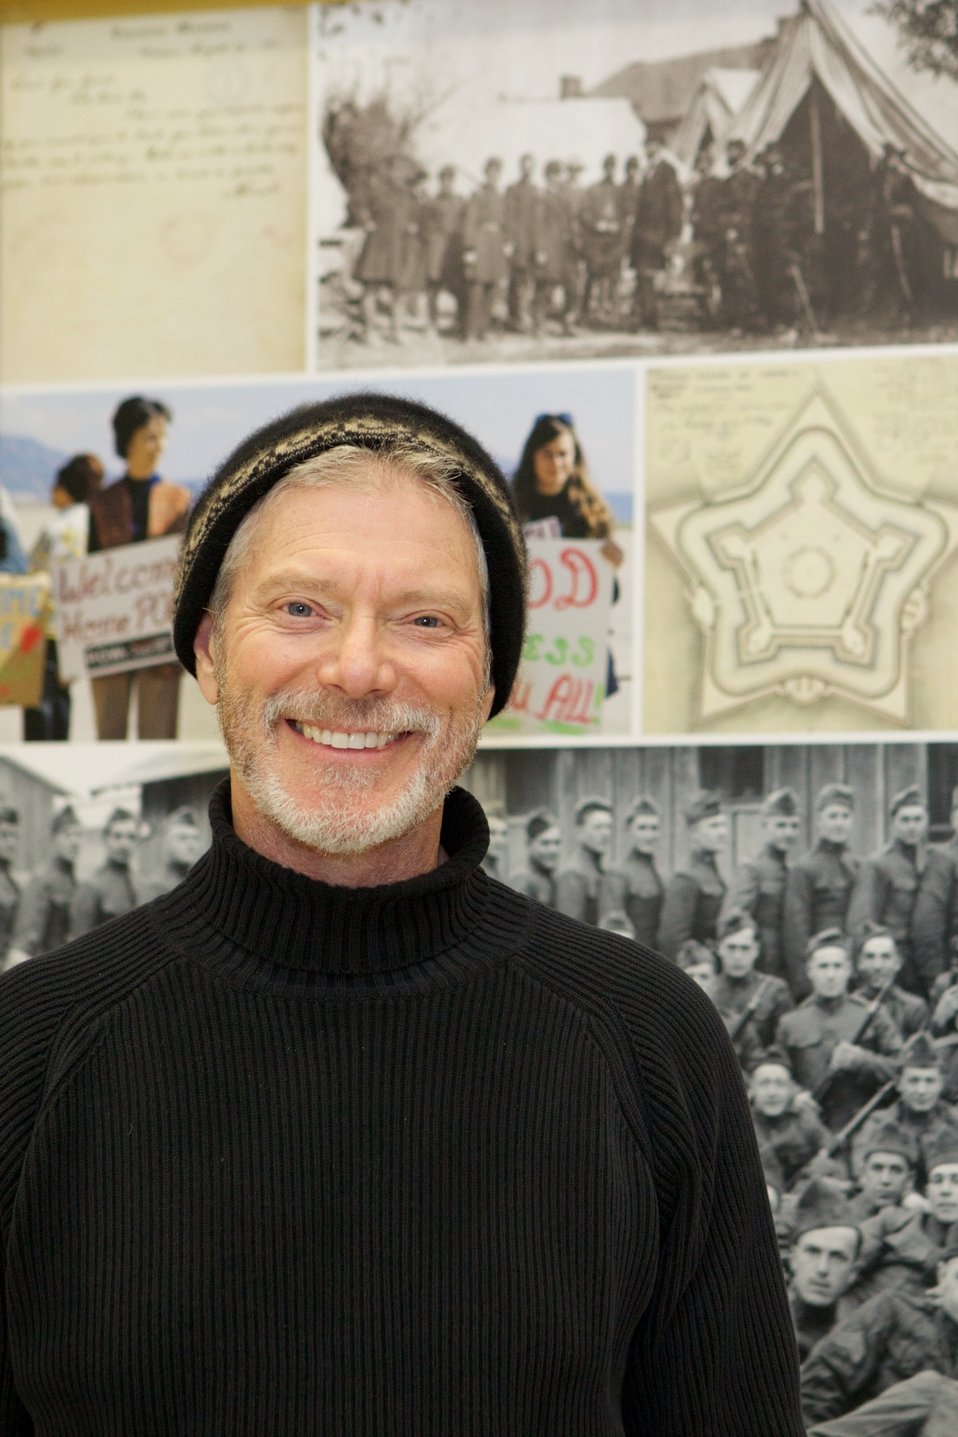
The Gettysburg Story and The Wheatfiled; Stephen Lang (right), actor and playwright